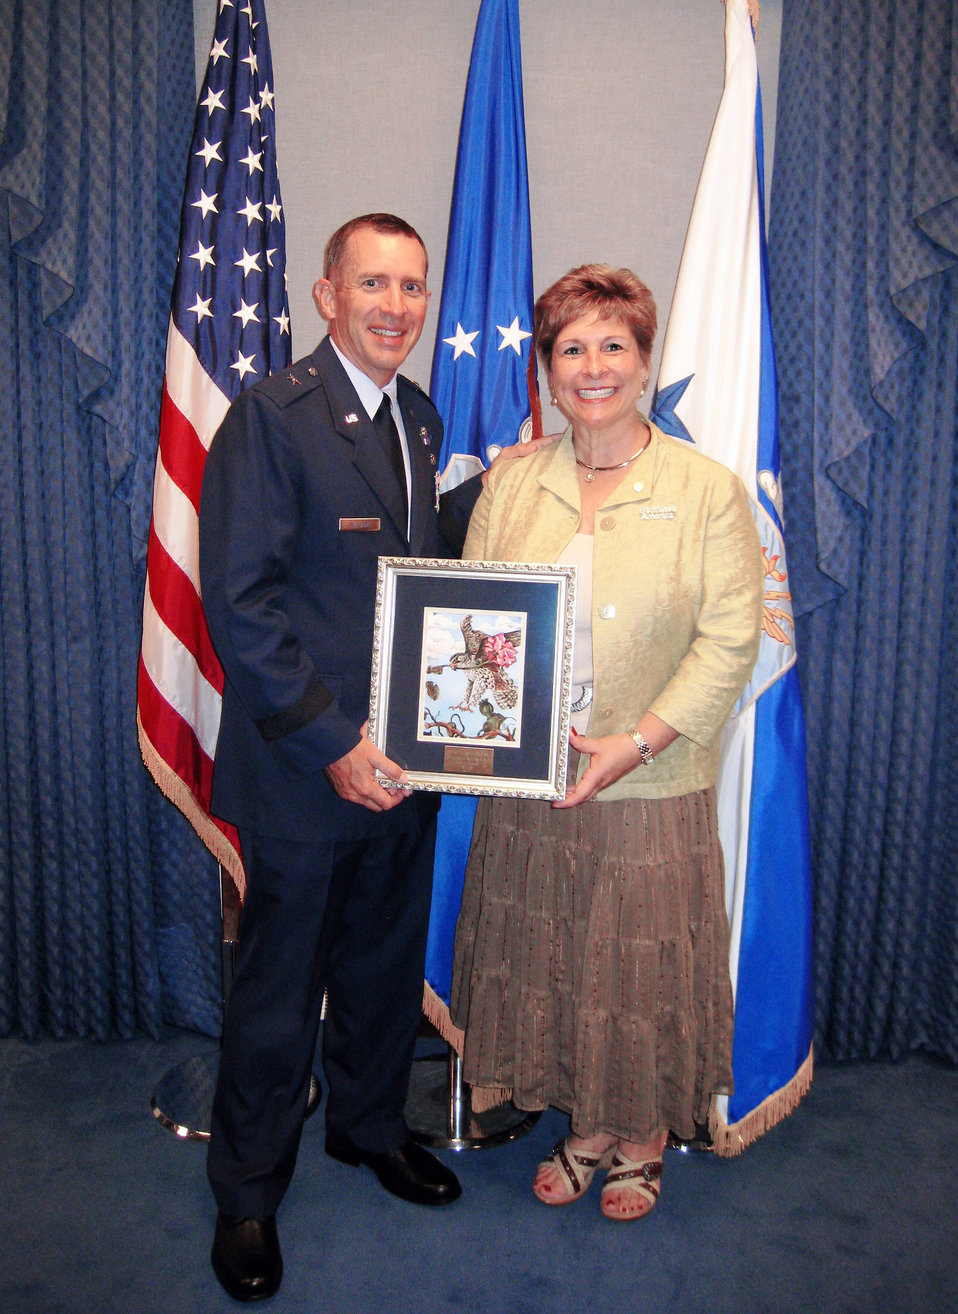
O'Malley Award

Brig. Gen. Brett and Marianne Williams show the picture of